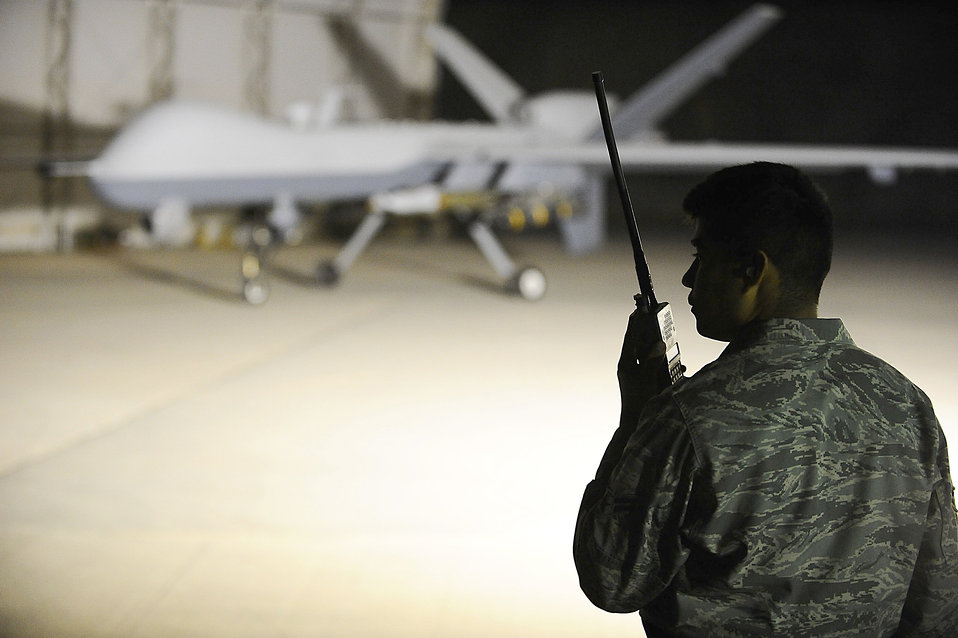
First Reaper aircraft maintenance unit deploys to Balad

Airman 1st Class Hugo Garnica communicates with an MQ-9 Reaper pilot with a land mobile radio at Joint Base Balad, Iraq, Nov. 18. He was performing a preflight check to ensure the unmanned aircraft vehicle was operational. Airman Garnica, an assistant dedicated crew chief assigned to the 332nd Expeditionary Aircraft Maintenance Squadron, is deployed from Creech Air Force Base, Nev.